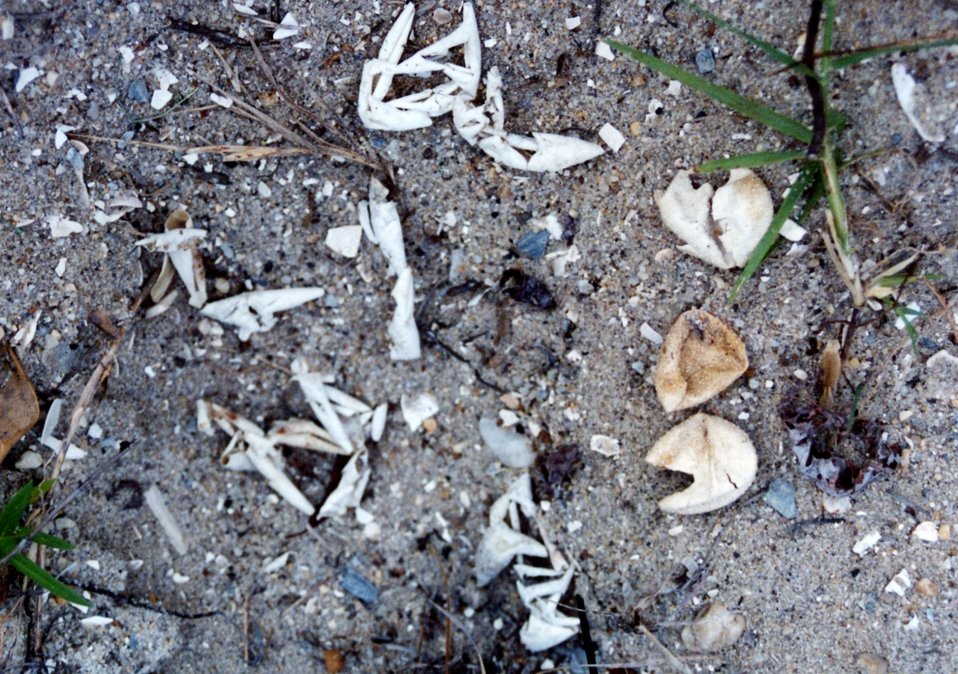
Diamondback terrapin eggs that were victims of predation: the three hatched eggs are of uncertain type.